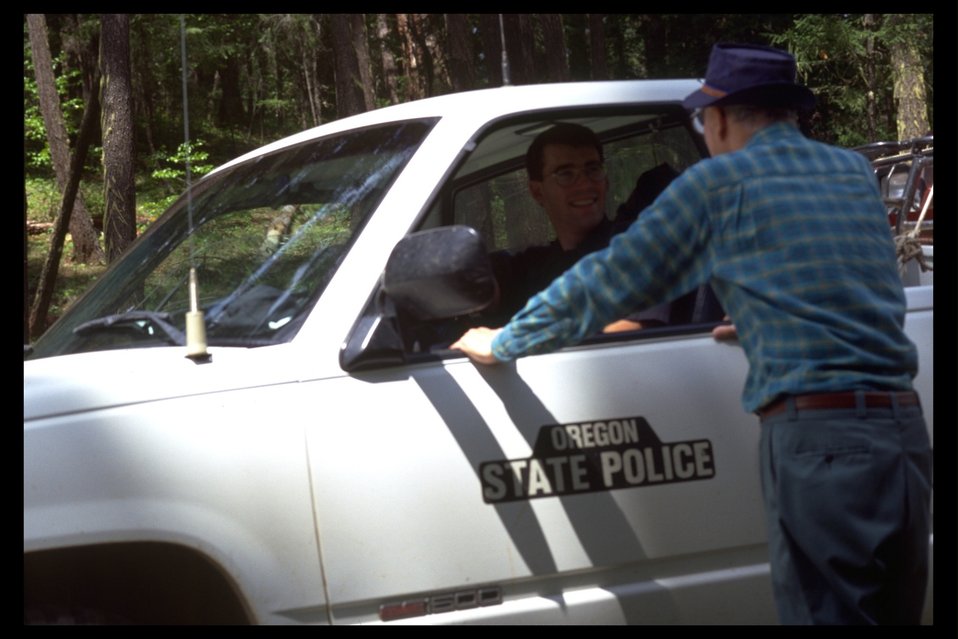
Miles Hill speaks with Oregon State Police (a reminder not to pick wildflowers in parks, natural preserves, etc.)